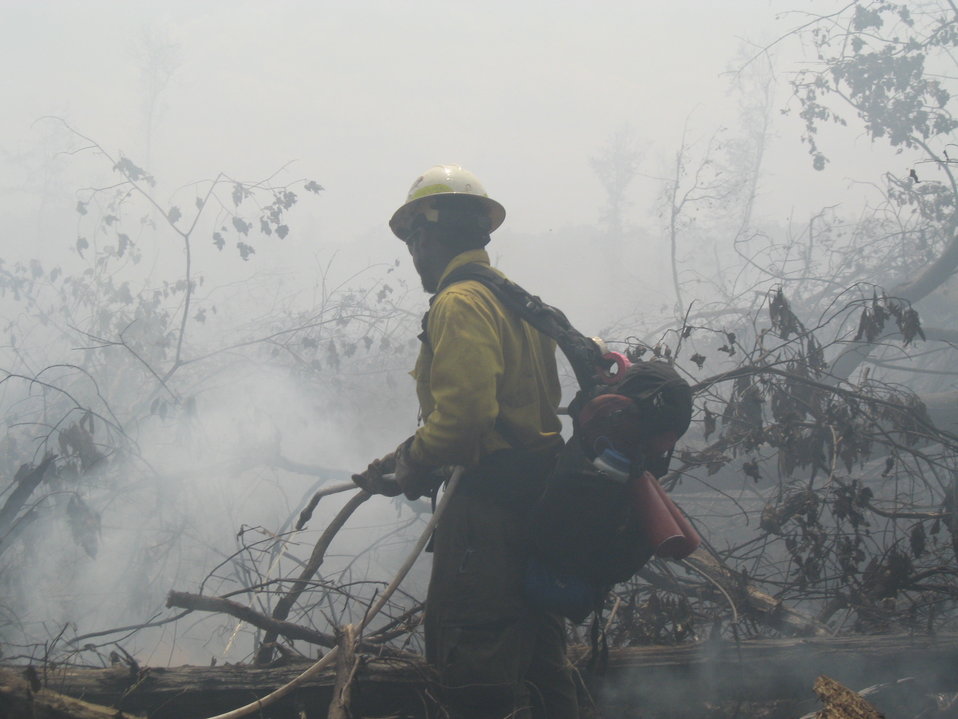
Hot Shot spray

Suffolk, VA, August 2011: A member of the Midewin Hot Shots cools down a peat fire burning deep into the Dismal Swamp soil at the Lateral West Fire.